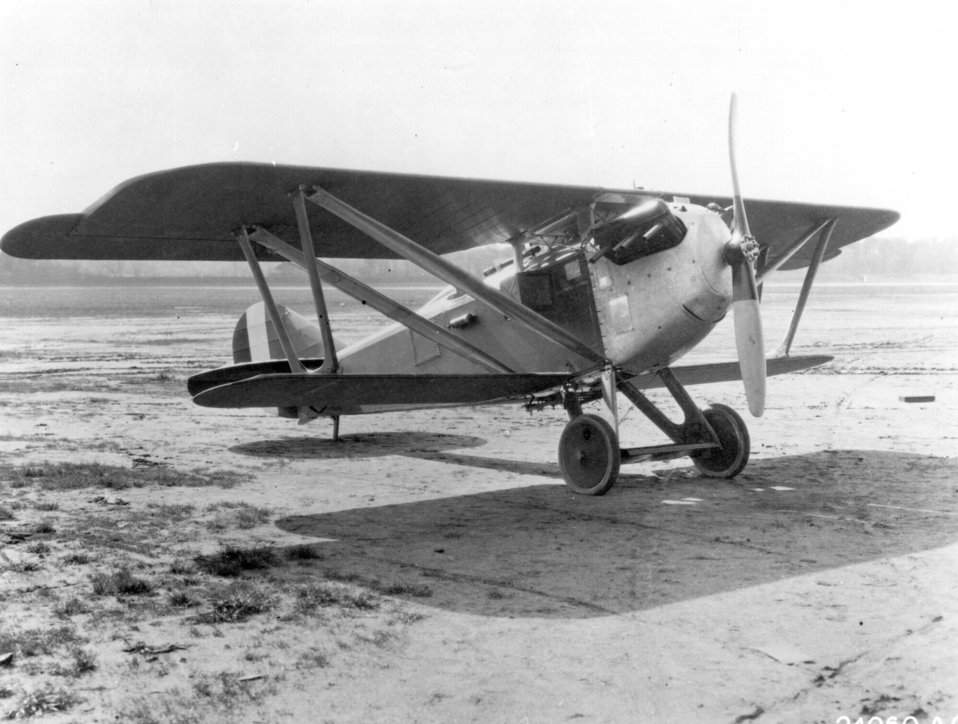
PW-3

EARLY YEARS -- PW-3